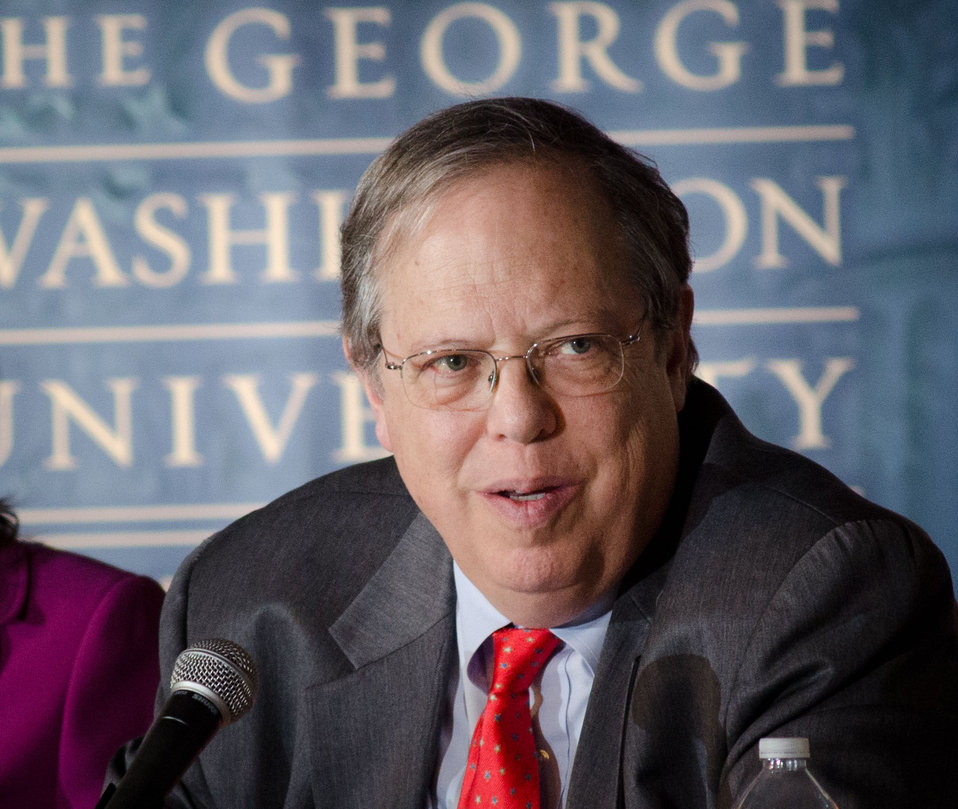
Food Research and Action Center President Jim Weill, makes opening remarks before a question and answer session during the “Shaping the Farm Bill for a Sustainable Future” Forum in the Jack Morton Auditorium, at the Trachtenberg School of Public Policy and Public Administration, on the George Washington University campus in Washington, D.C., on Thursday, March 1, 2012.